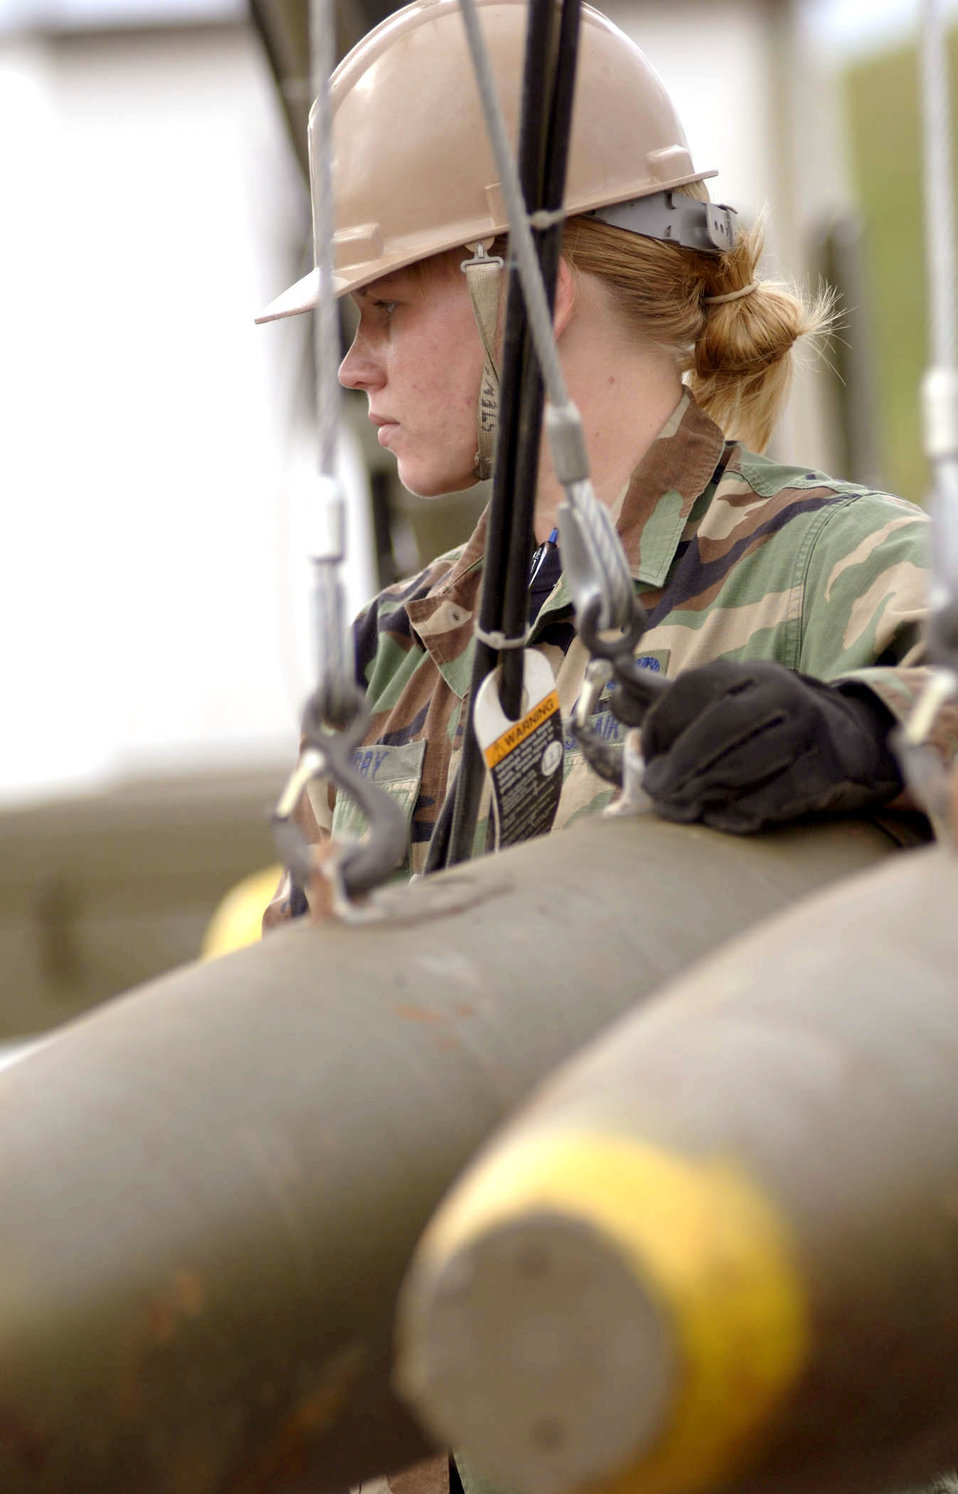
To build a better bomb

SPANGDAHLEM AIR BASE, Germany -- Senior Airman Manda Kirby controls the lift maneuvering Mark-82 bombs during a live build-up here while preparing for a live fire exercise. She's a munitions assistant crew chief with the 52nd Equipment Maintenance Squadron.